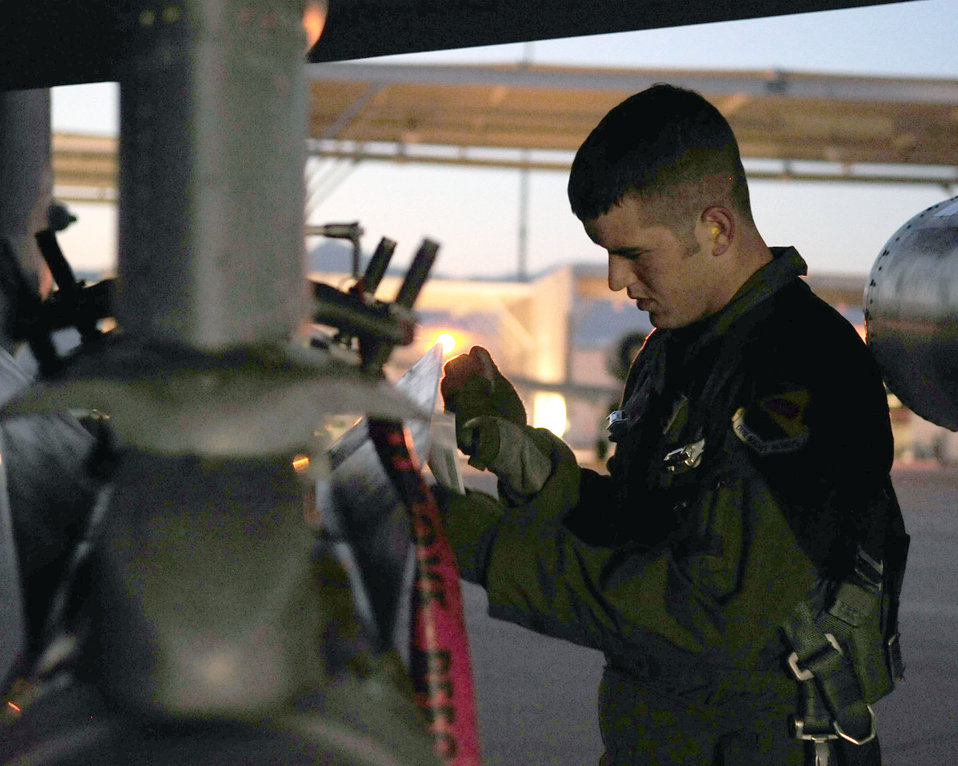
A-10 qualification

Prior to a training flight June 23, 2010, 1st Lt. Dan Griffin, a pilot from the 358th Fighter Squadron at Davis-Monthan Air Force Base, Ariz., inspects his A-10C Thunderbolt II aircraft. This was the lieutenant's second of eight night flying missions as part of the A-10C Pilot Initial Qualification course curriculum. Upon completion of this course he will be a fully qualified A-10C pilot.